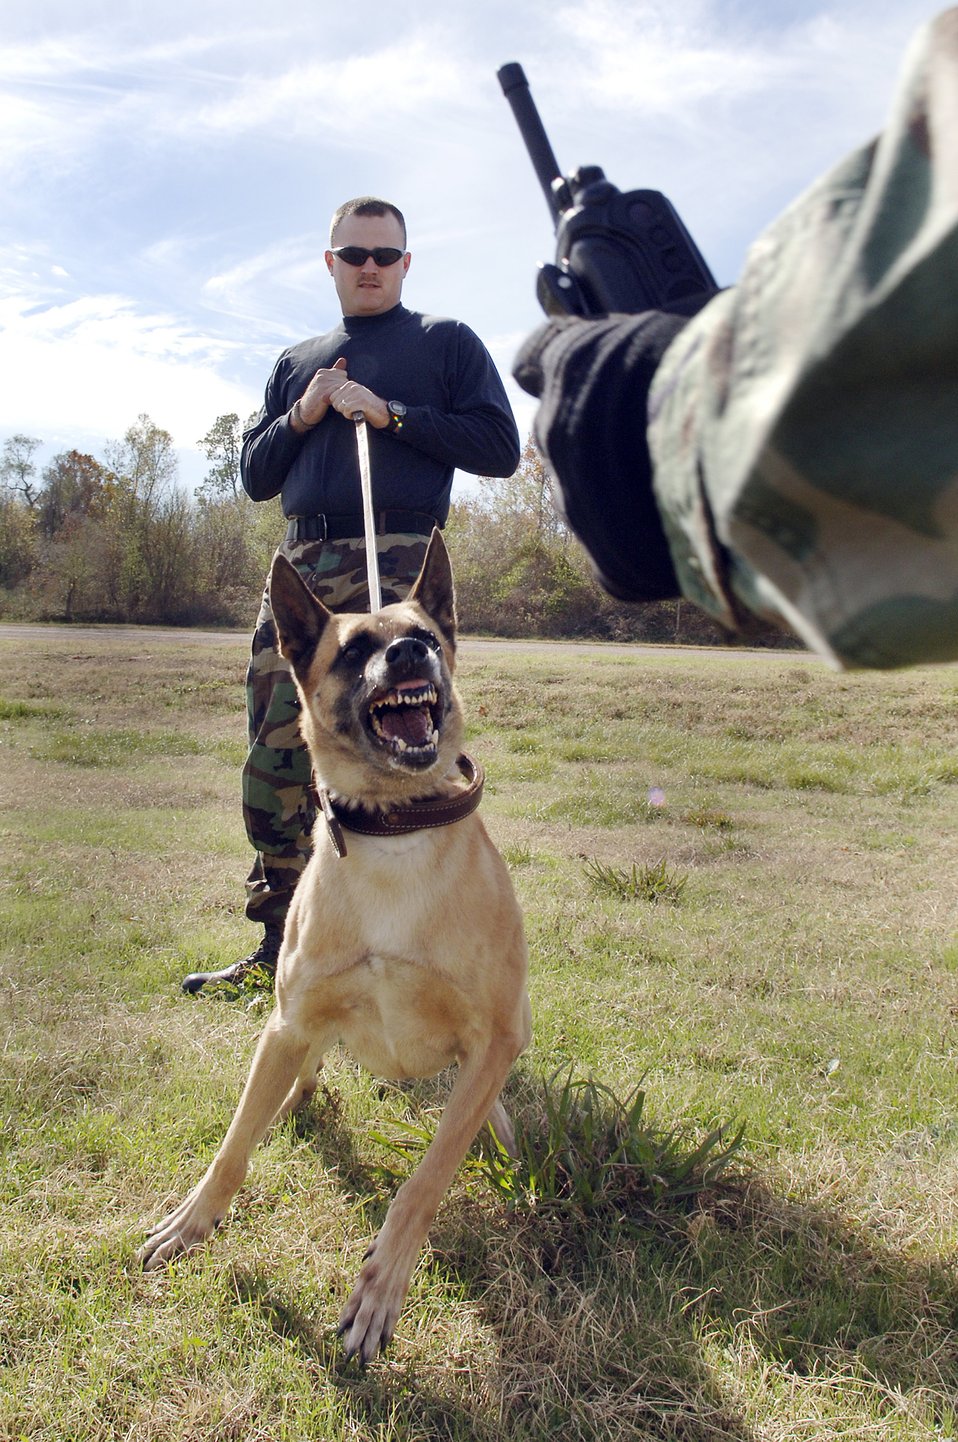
Expeditionary Combat Skills Training Course

BARKSDALE AIR FORCE BASE, La. (AFPN) -- Staff Sgt. Kristopher Russ holds back his military working dog, Rouge, at the base's expeditionary combat skills training course. The weekly course, which ends this month, prepares Airmen for deployment. Military working dogs are now part of the course to help provide a more realistic training experience. Sergeant Russ and Rouge are both with the 2nd Security Forces Squadron.